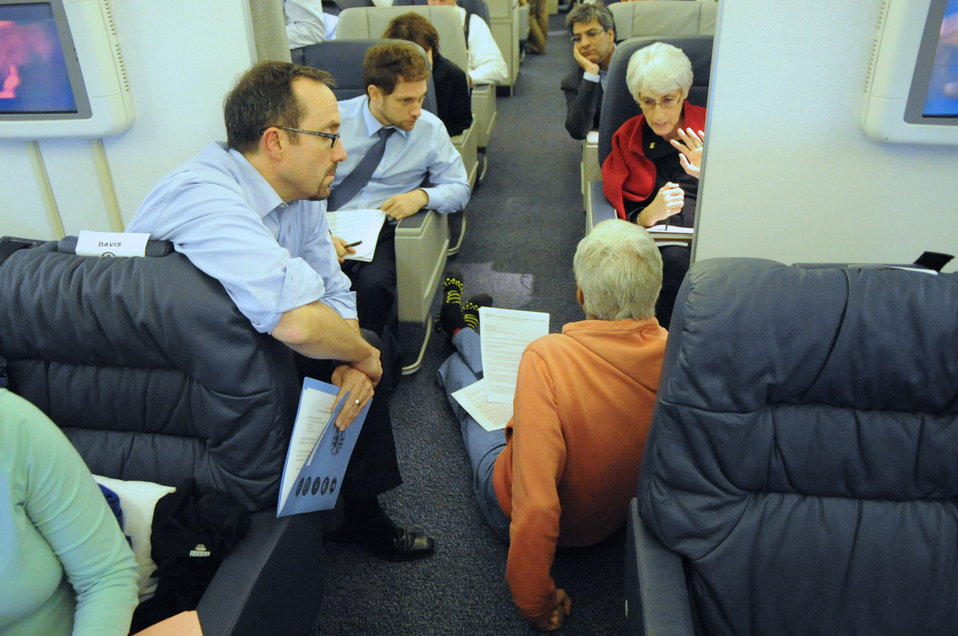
Secretary Kerry Holds In-Flight Staff Meeting

9:59 p.m., September 11, 2013 - U.S. Secretary of State John Kerry sits in the aisle of his Air Force jet as he chats with, from left, Executive Secretary John Bass, Deputy Chief of Staff Jonathan Finer, Counselor to the National Security Advisor Salman Ahmed, and Undersecretary for Political Affairs Wendy Sherman about upcoming negotiations with Russian officials focused on eliminating Syrian chemical weapons.